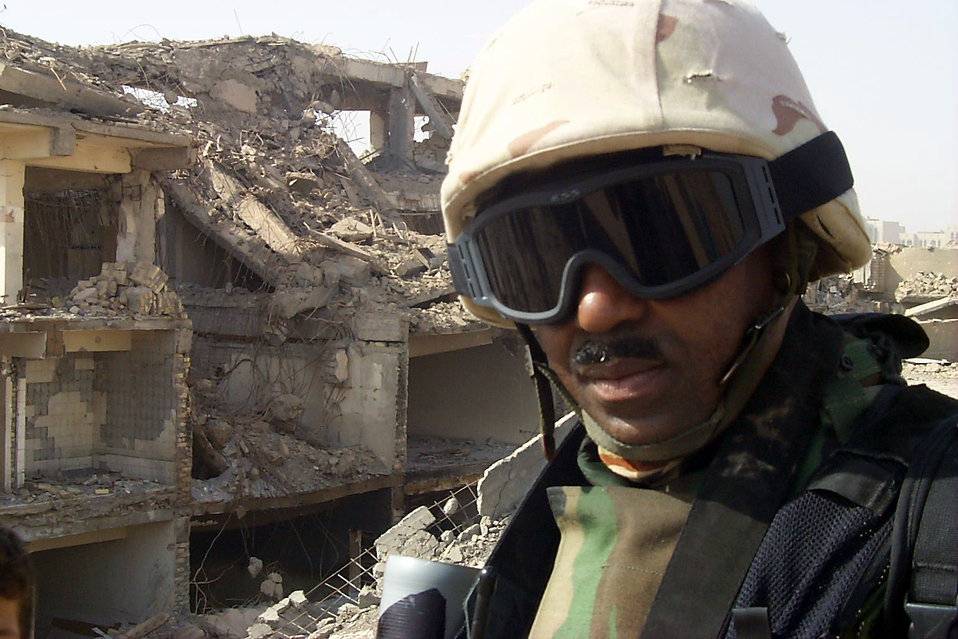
On the scene

BAGHDAD, Iraq -- Master Sgt. Michael Best stands amidst the rubble of what was formerly the Iraqi Ministry of Defense complex here. Best is a combat-camera photographer deployed from Charleston Air Force Base, S.C.